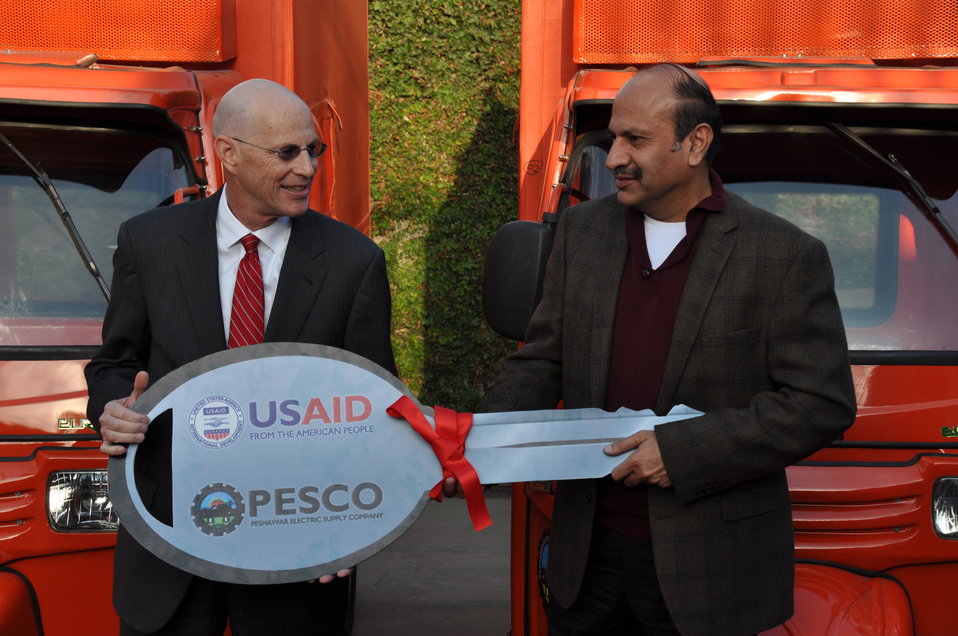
United States Government Strengthens PESCO Field Operations 09